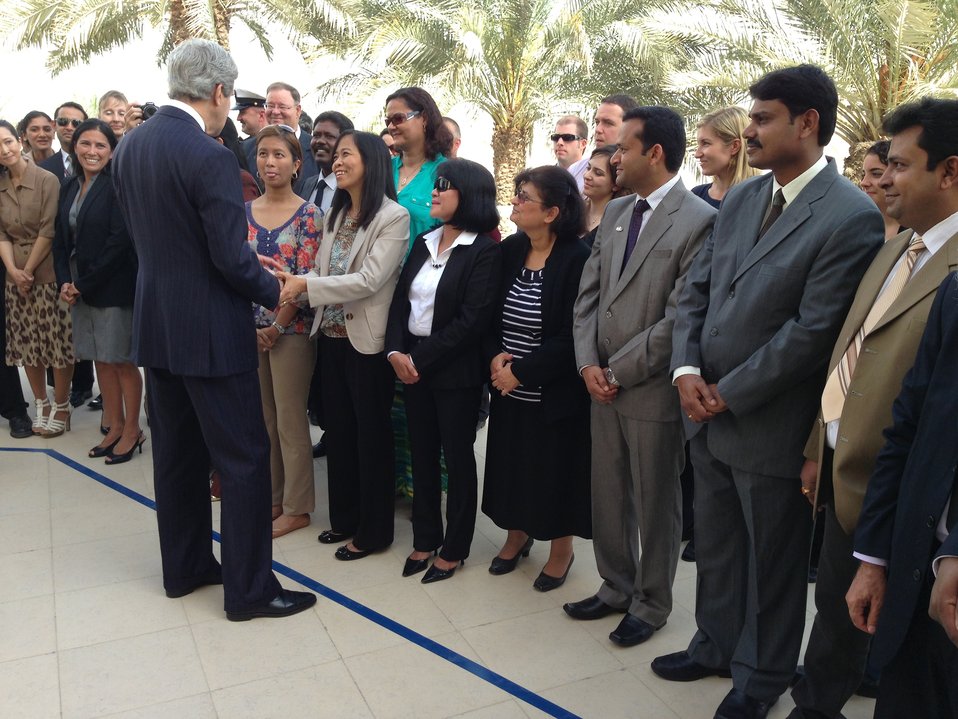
Secretary Shakes Hands With Embassy Doha Staff

U.S. Secretary of State John Kerry shakes hands with staff of the U.S. Embassy in Doha, Qatar, on March 6, 2013.